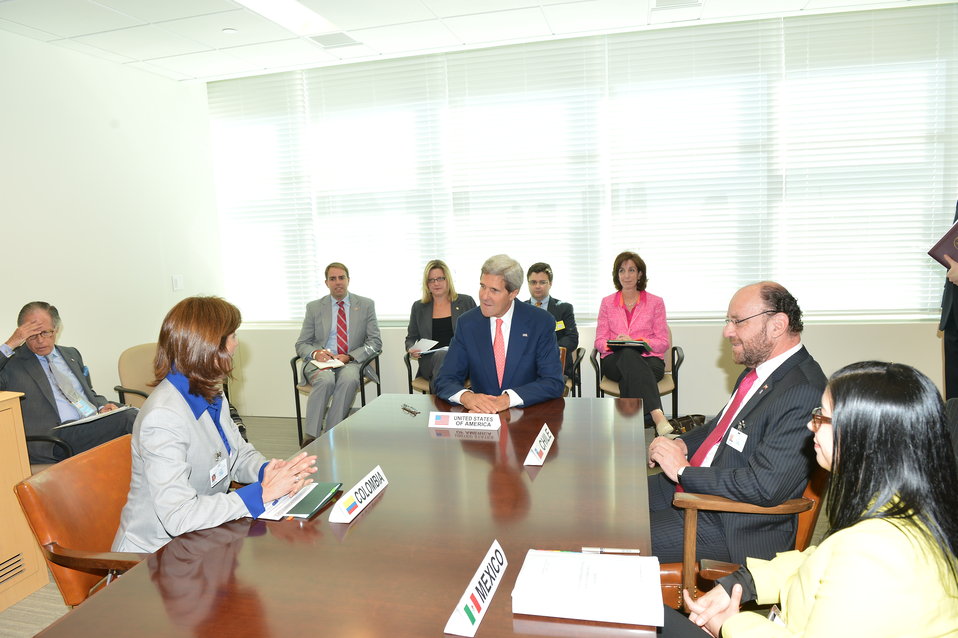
Secretary Kerry Participates in a Meeting of the Pacific Alliance Foreign Ministers

U.S. Secretary of State John Kerry participates in a meeting of the Pacific Alliance Foreign Ministers at the United Nations in New York City on September 23, 2013.